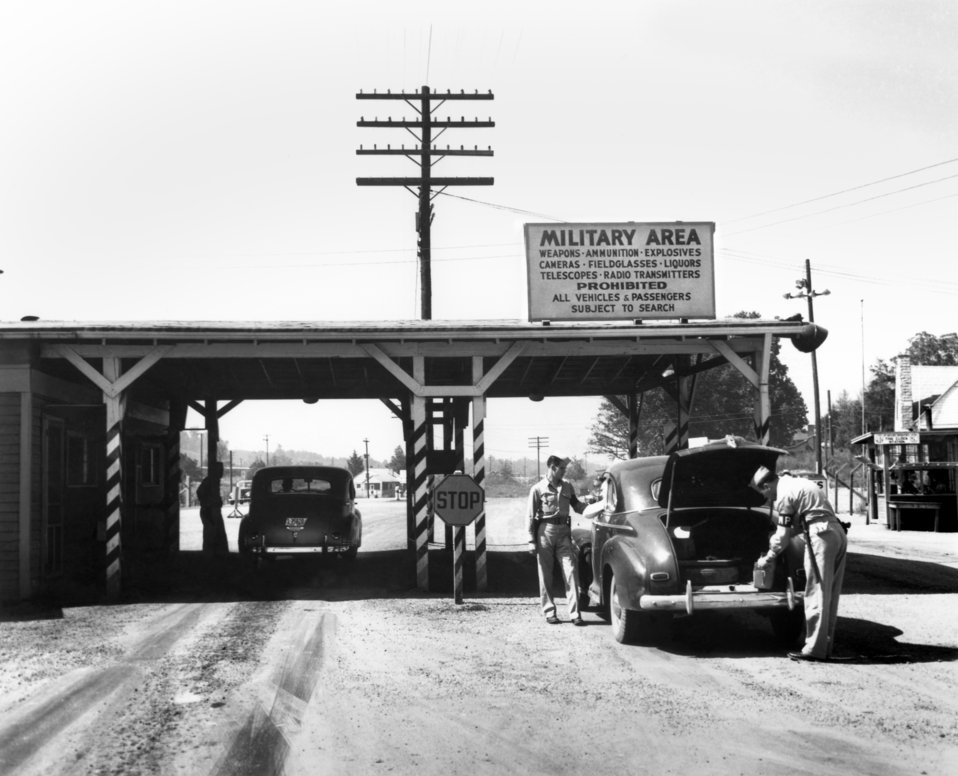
Elza Gate MP Oak Ridge

Elza Gate DOE photo by Ed Westcott Elza Gate MP 1945 Oak Ridge Tennessee